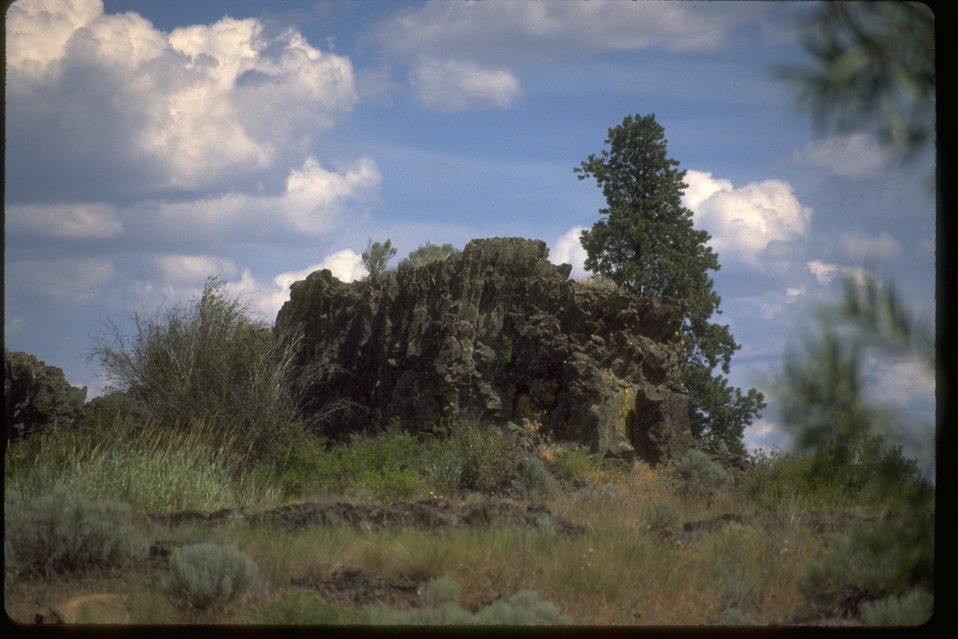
Basalt formation in Twin Lakes area, Lincoln County, Washington